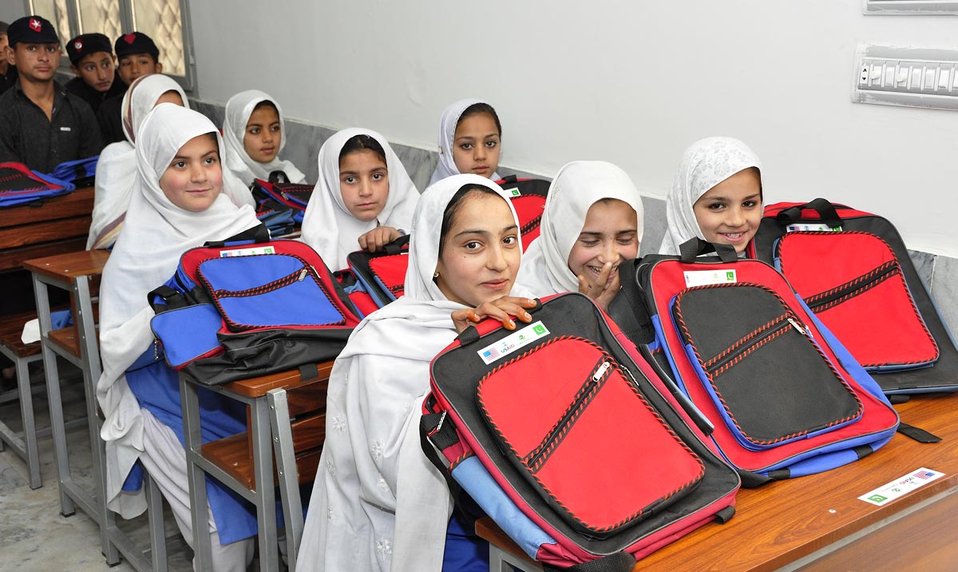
Buner School

Peshawar, March 14, 2012 - The Provincial Reconstruction, Rehabilitation and Settlement Authority (PaRRSA) handed over today to the KP Education Department the first of the 122 U.S. Government-sponsored schools at Torwarsak, Buner.